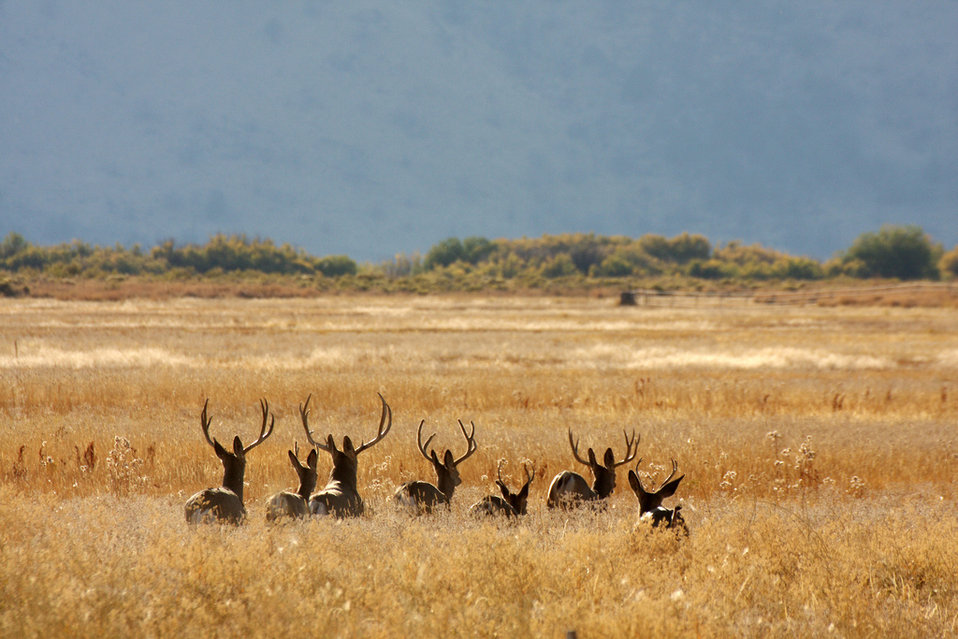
mule deer bucks at Malheur Refuge

Malheur National Wildlife Refuge, OR
Photo: Barbara Wheeler, USFWS
Originally set aside by Congress in 1908 primarily to protect migratory birds, this refuge also shelters many other kinds of wildlife.